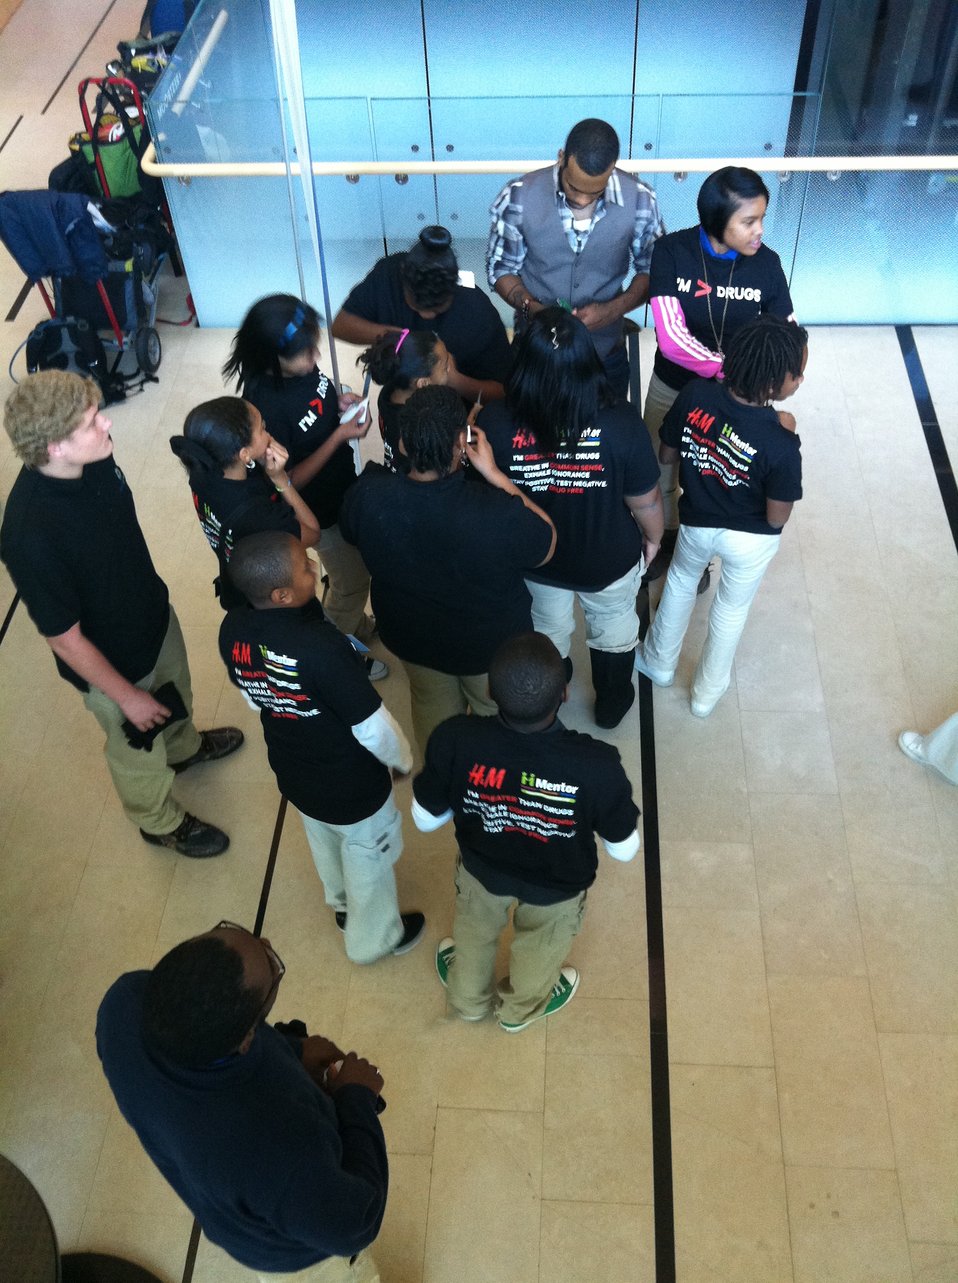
Mentor 15